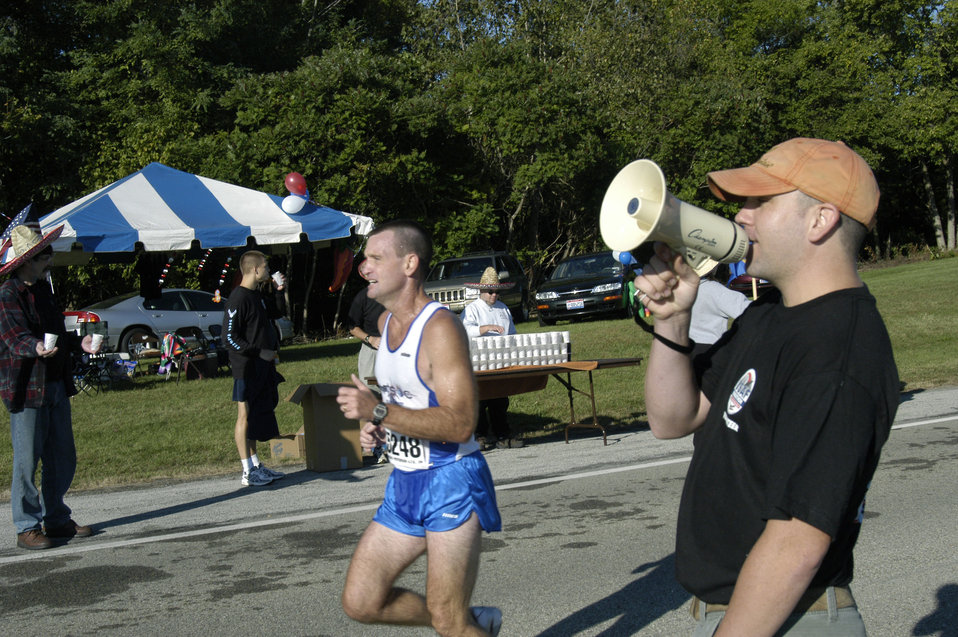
AF officials announce marathon results

WRIGHT-PATTERSON AIR FORCE BASE, Ohio -- A member of Team Moody approaches the third relay exchange during the 8th annual official Air Force Marathon here Sept. 18. More than 3,800 runners competed in the marathon.